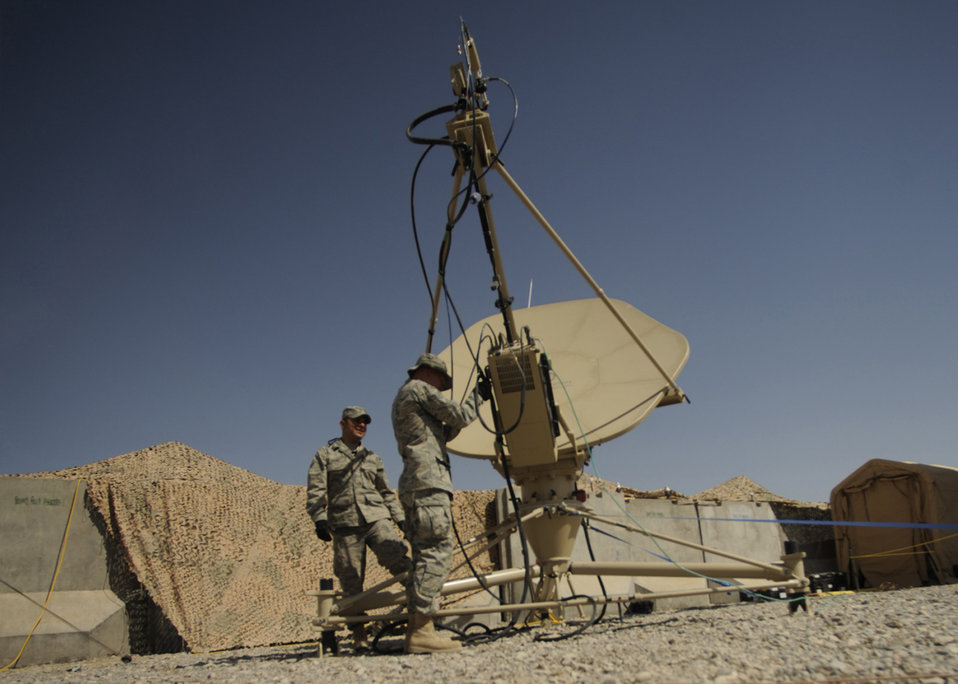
Operation Enduring Freedom

Senior Airman Sergio Saenz and Airman 1st Class Frank Fauland perform routine maintenance May 17 on a satellite dish at Kandahar Airfield, Afghanistan. Combat communications Airmen are responsible setting up and maintaining base telephone and internet communications. The Airmen are RF transmissions engineers and satellite communications technicians with the 451st Combat Communications Squadron at Kandahar.